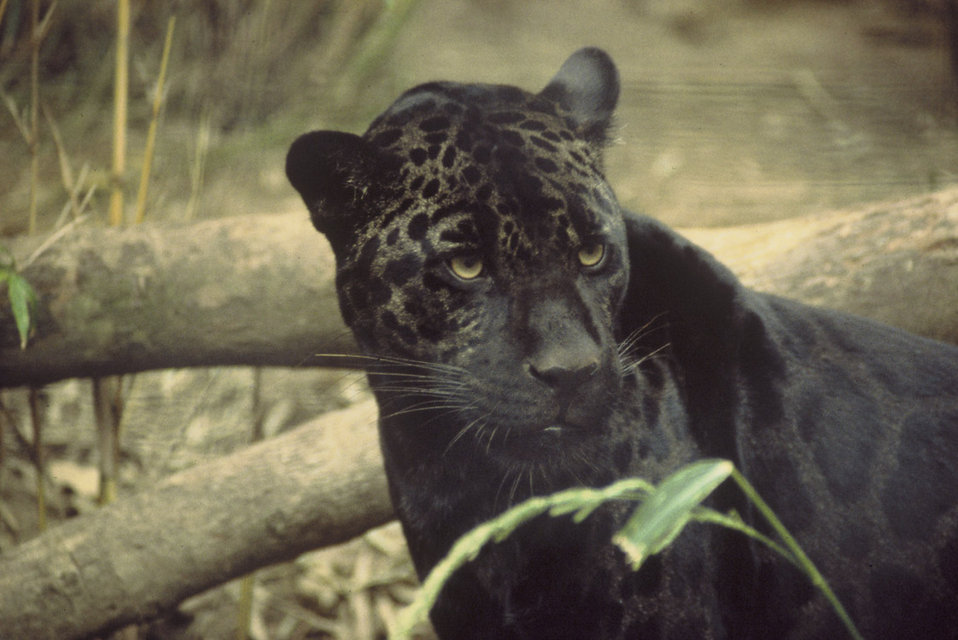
jaguar